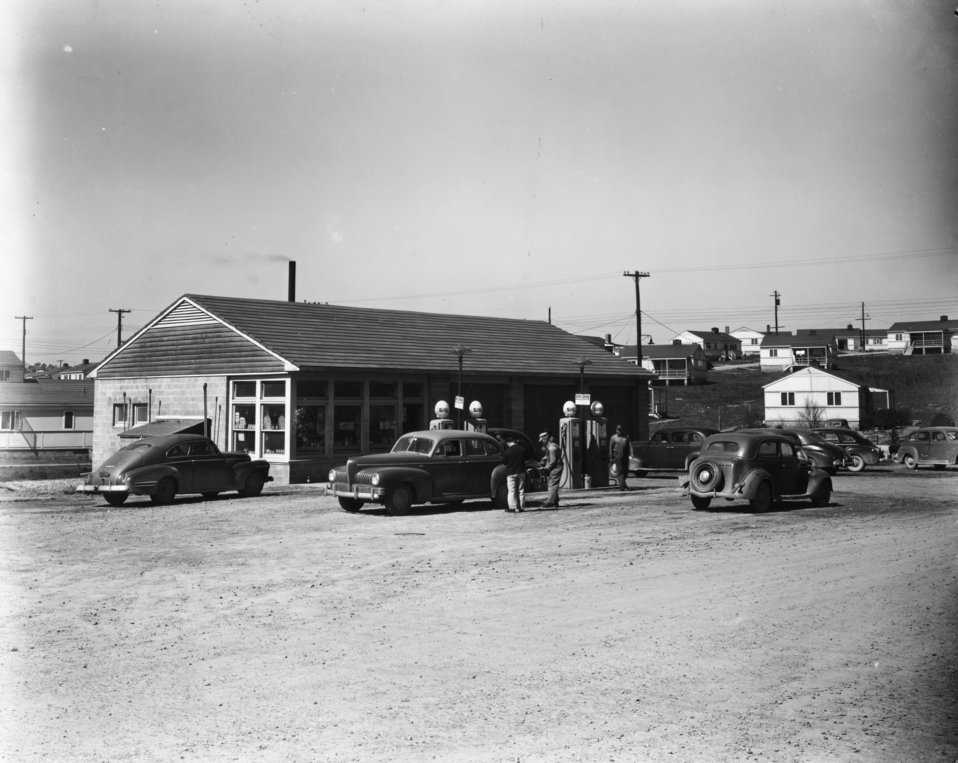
Business activity at Oak Ridge